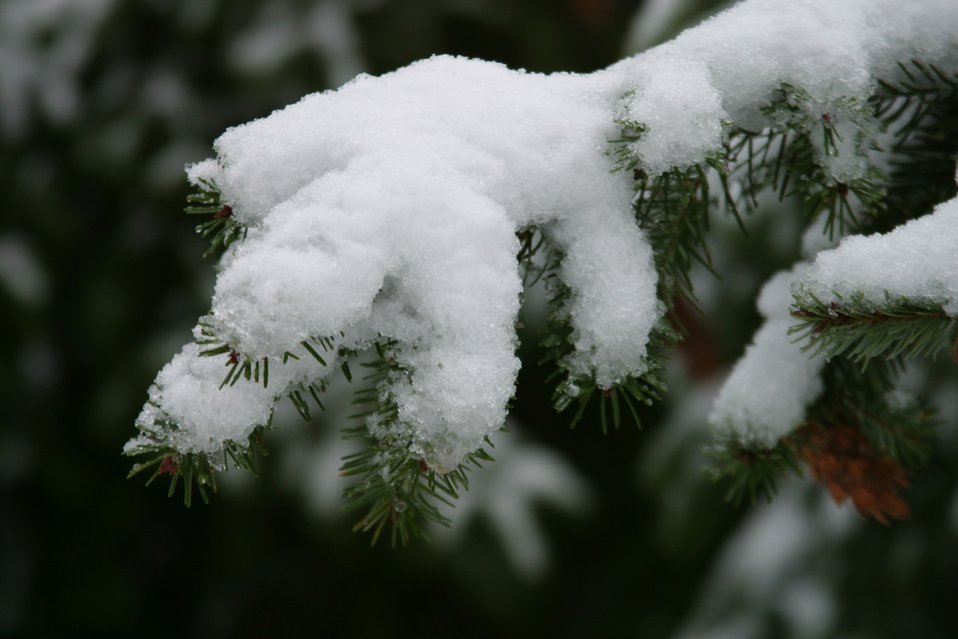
Snow and ice on Douglas Fir Bows and cones during the storm of January 2004.